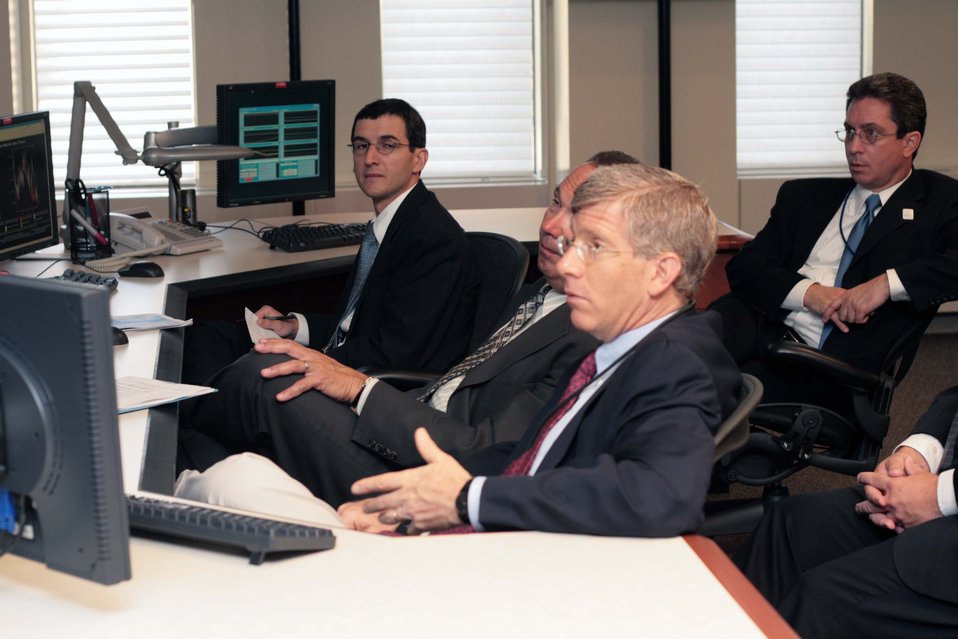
P-23B